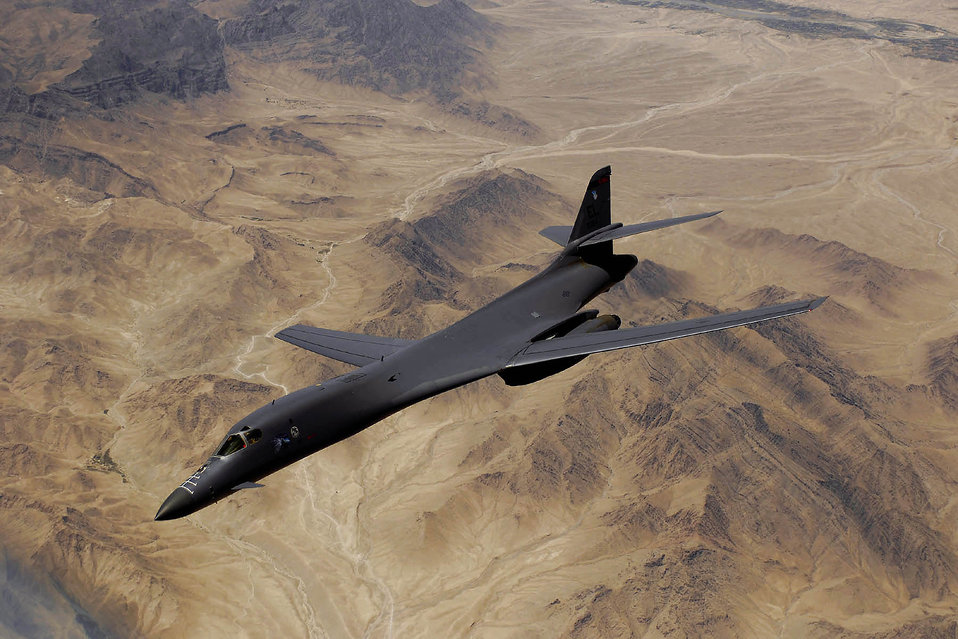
June 15 airpower summary: B-1Bs bomb enemy compound

An Air Force B-1B Lancer aircraft moves out of position after receiving fuel from a KC-135R Stratotanker during a mission over Afghanistan.